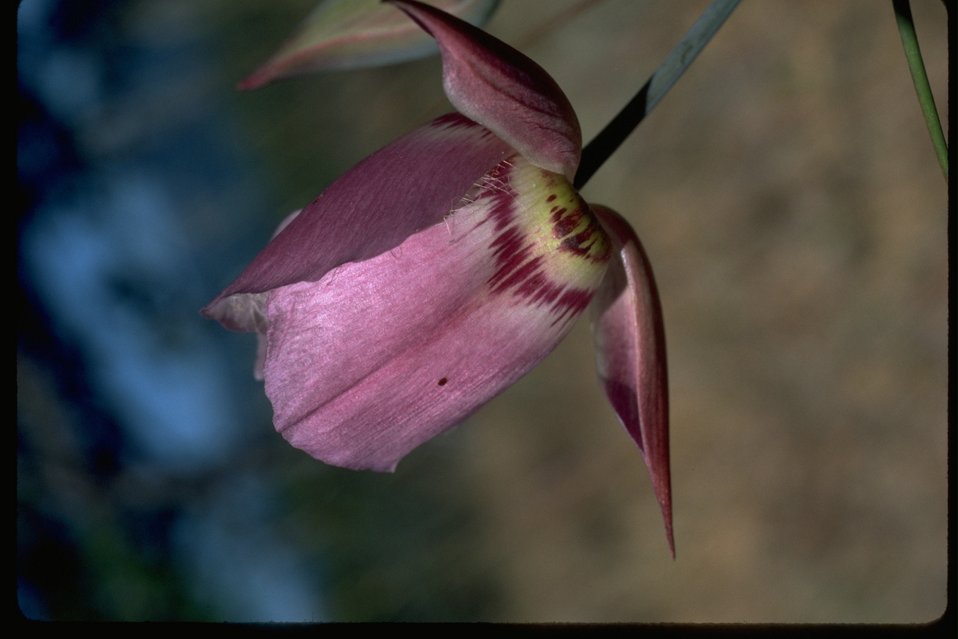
Calochohus Grecnii.